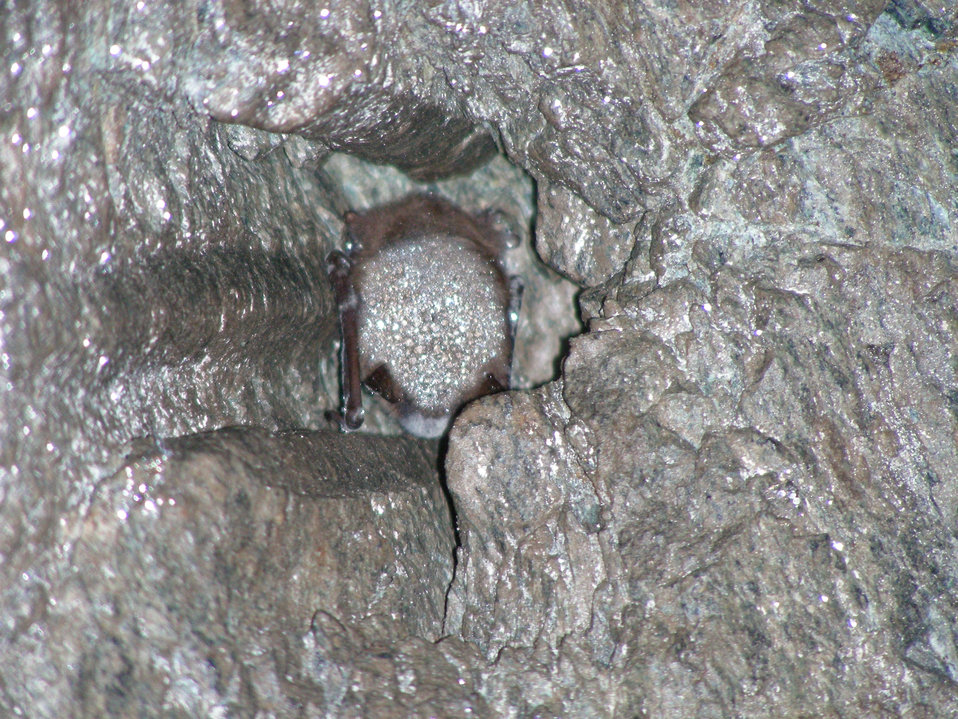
Bat affected by White-nose Syndrome

Little brown bat with white-nose syndrome in Greeley Mine, Vermont, March 26, 2009